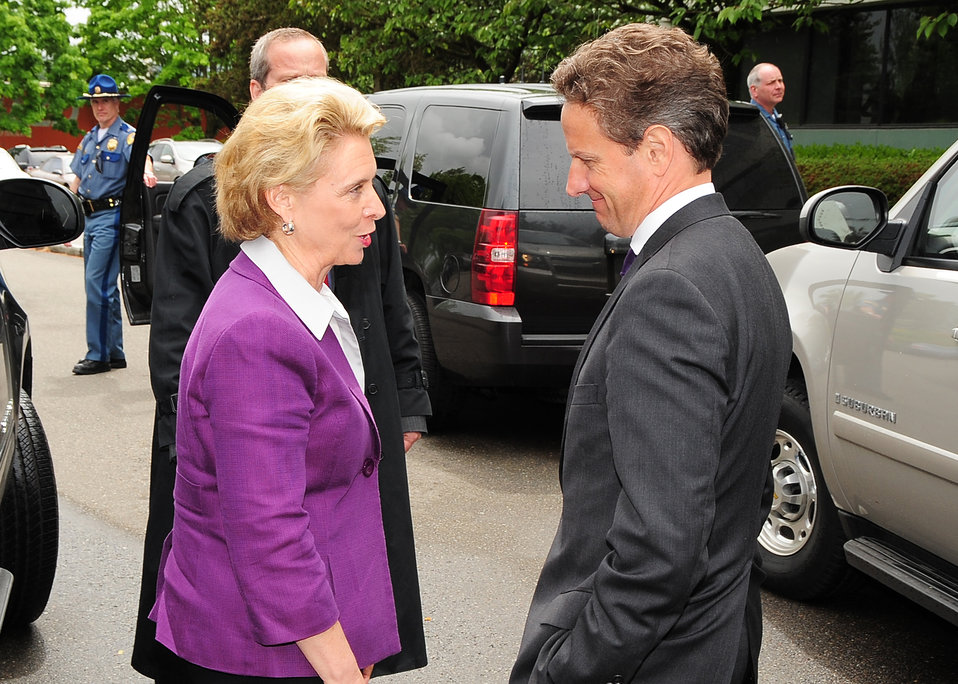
Tacoma, 5/18/2010

Governor Gregoire greets Secretary Geithner at the Port of Tacoma.